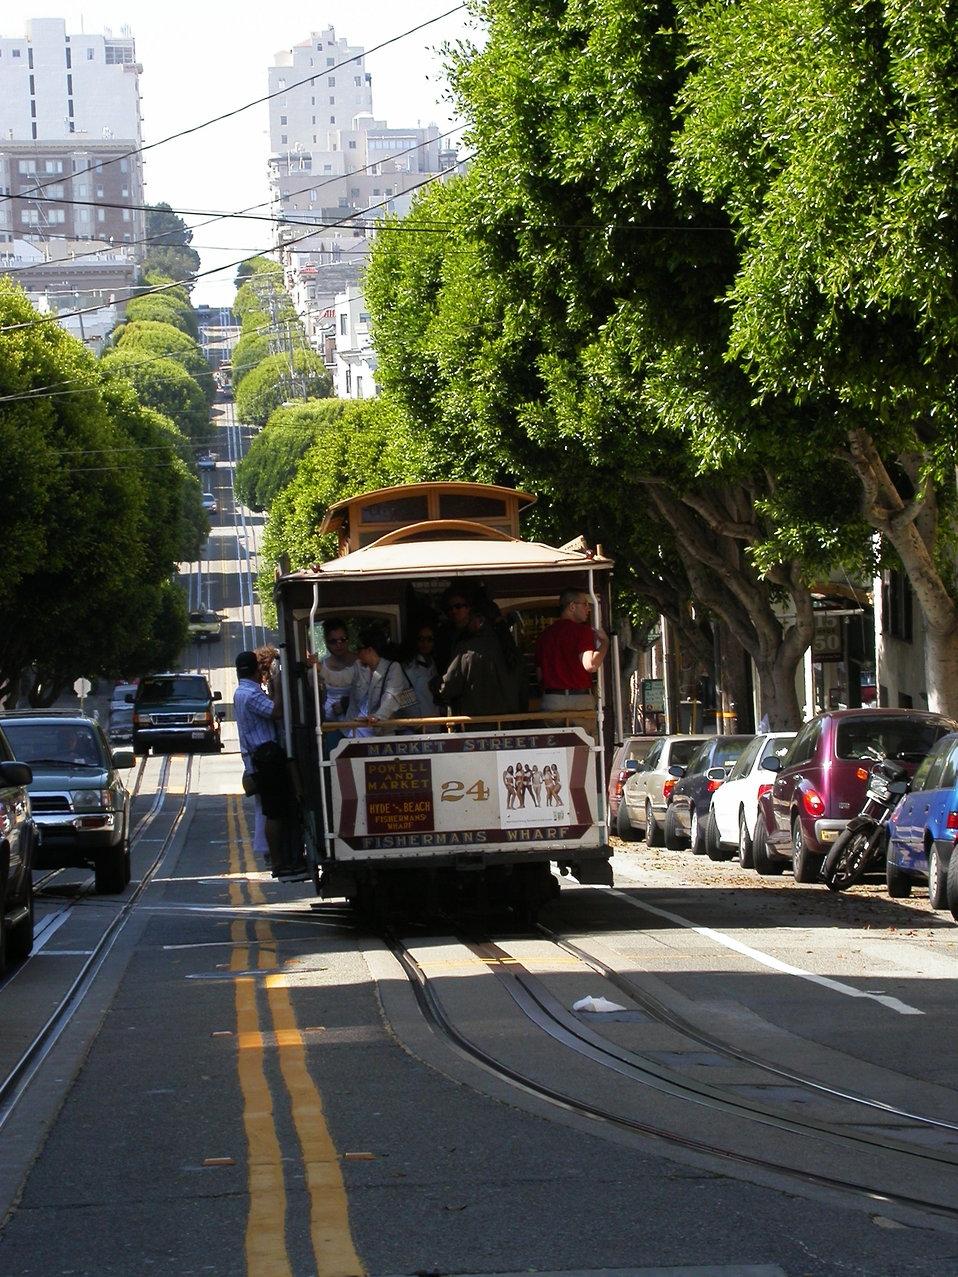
Cable car #24 in San Francisco in 2005. Taken using a Nikon Coolpix 4500.